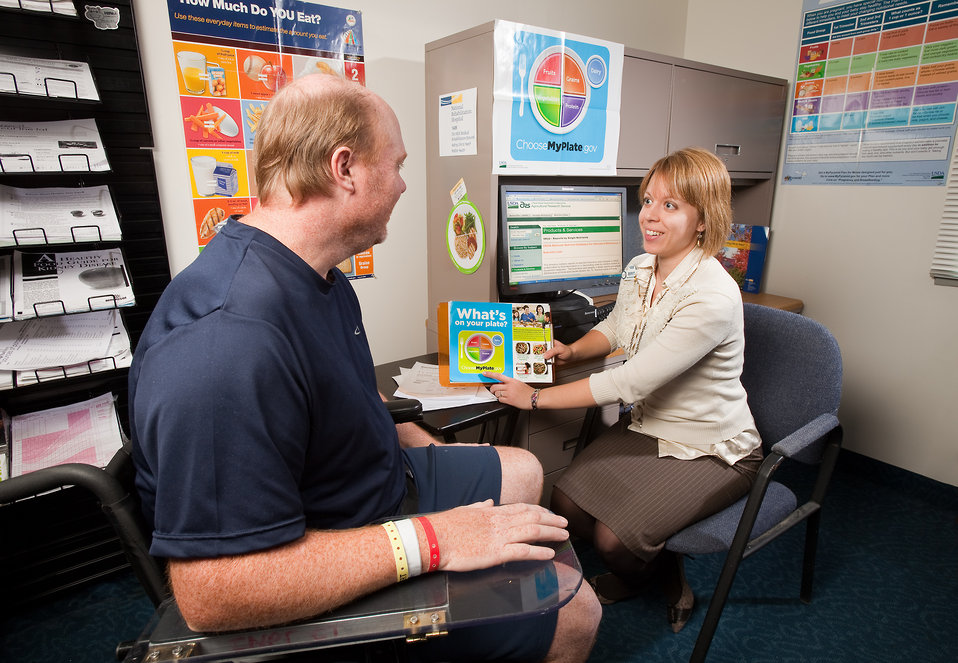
Clinical dietitian Berit Christensen (right) uses materials from ChooseMyPlate.gov and the U.S. Department of Agriculture (USDA) Agriculture Research Service (ARS) National Nutrient Database to teach a recovering stroke patient how to manage weight and blood pressure through better nutrition at the National Rehabilitation Hospital in Washington, D.C. on Jan. 3, 2012.